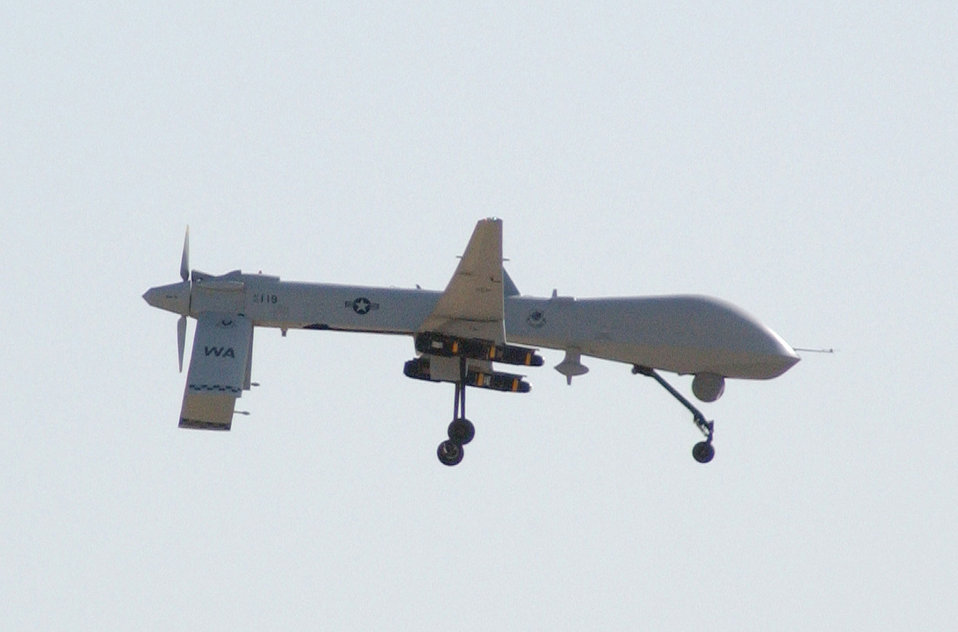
Predator crash

An MQ-1 Predator unmanned aircraft, like the one shown here, crashed Feb. 9, 2010, during takeoff from an air base in Afghanistan.